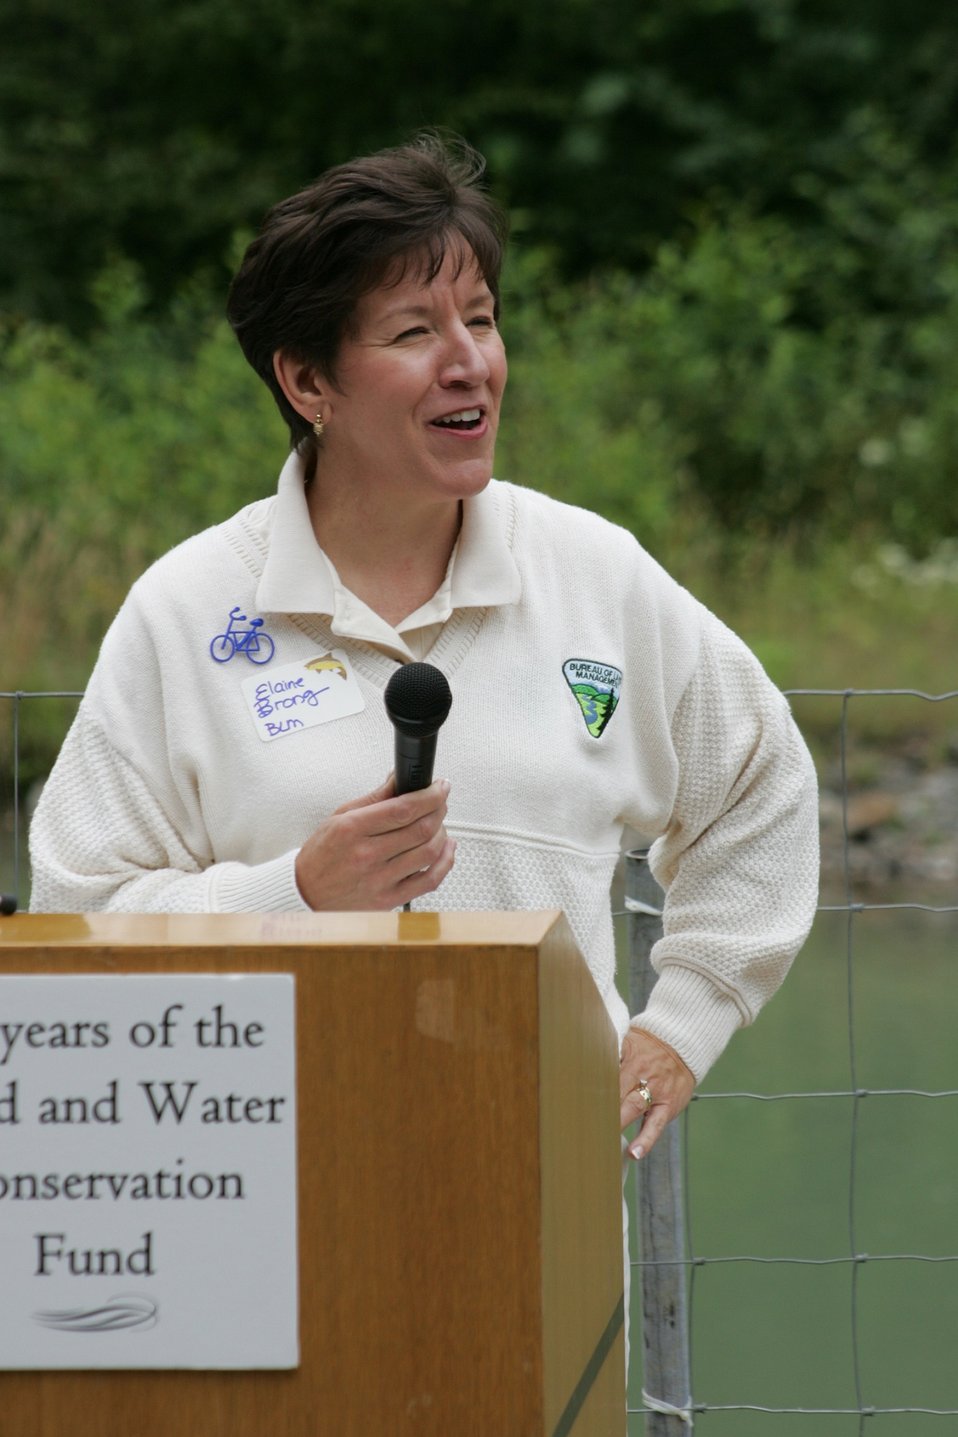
Elaine Brong, BLM State Director for Oregon, speaks during the Four C's Award ceremony at the Little Sandy Dam. The award was presented by Kathleen Clarke, BLM Direcgor, to PGE and the Western River Conservancy.